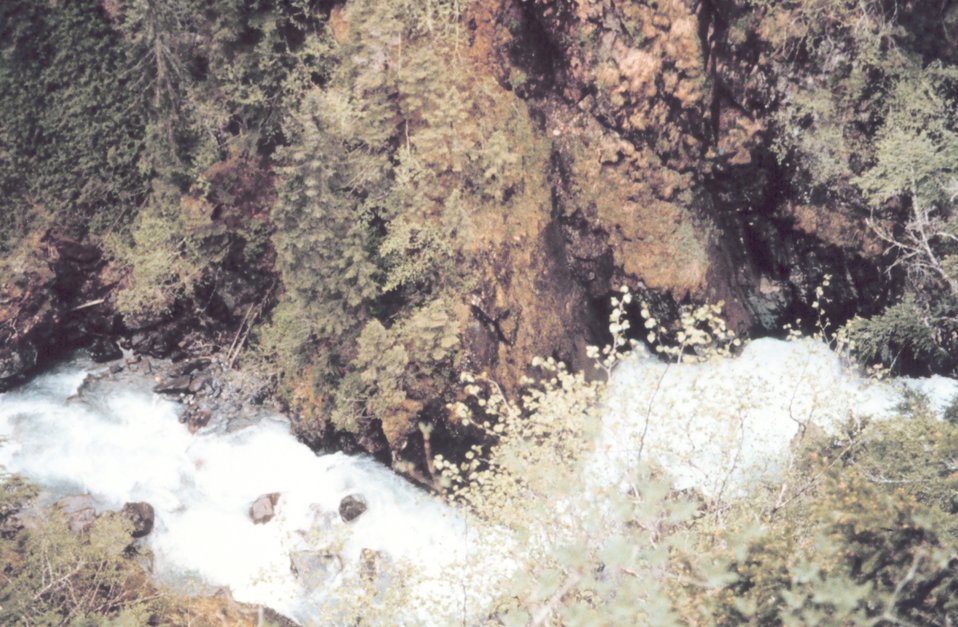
Mountain stream above Mendenhall Glacier